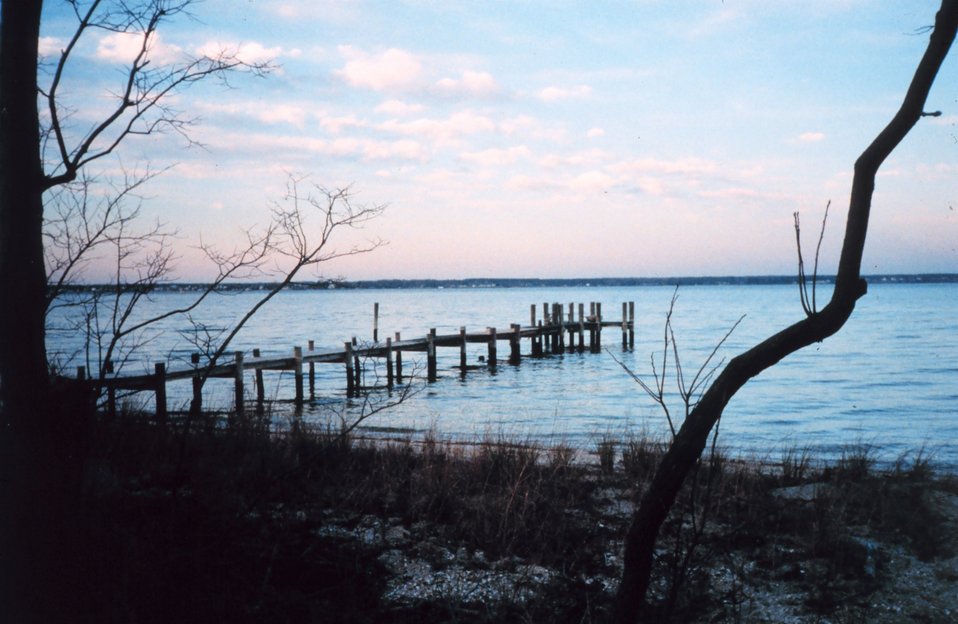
Looking east away from the sun during a sunset along the lower Patuxent River.